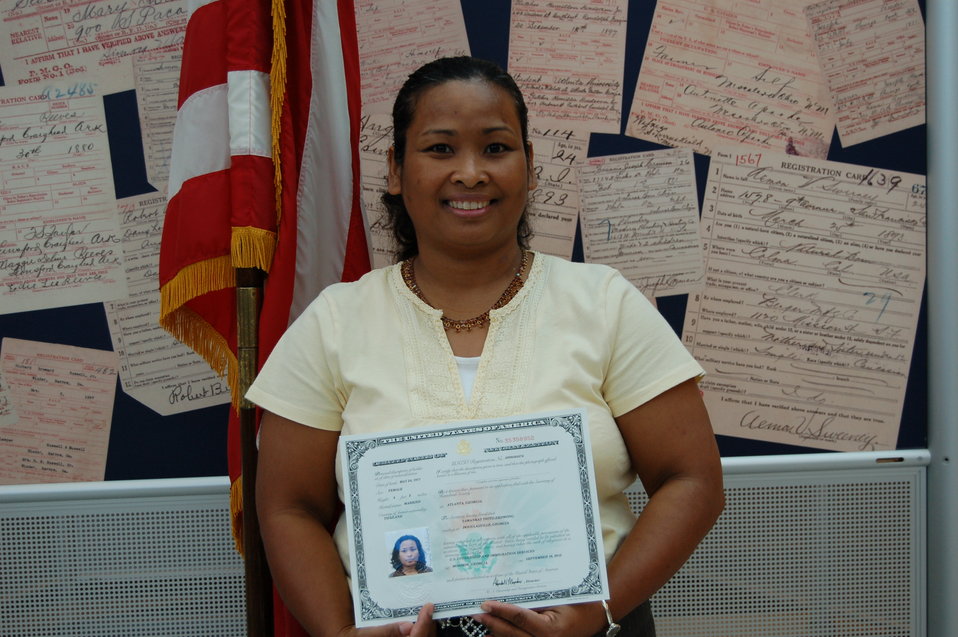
New Citizens